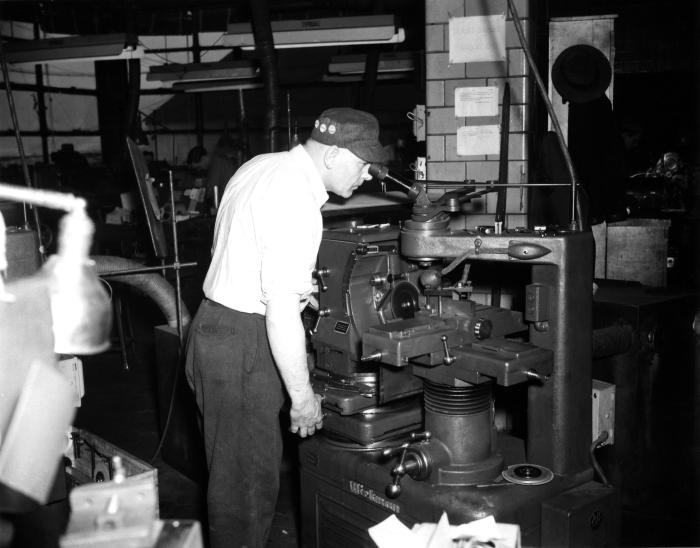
This 1946 historical photograph was provided by the Center for Disease Control's (CDC), National Institute for Occupational Safety and Health (NIOSH). In this image, a plant worker was seen using a milling machine in a tungsten carbide (W2C) machine shop. Note that the worker was not wearing a face mask. Today's workers are warned to avoid inhalation of the very fine W2C dust; wear protective gloves to prevent skin contact; protect eyes from airborne dust contamination; avoid eating, drinking, or smoking while in the machine shop environment, which could lead to the ingestion of dust contaminants.